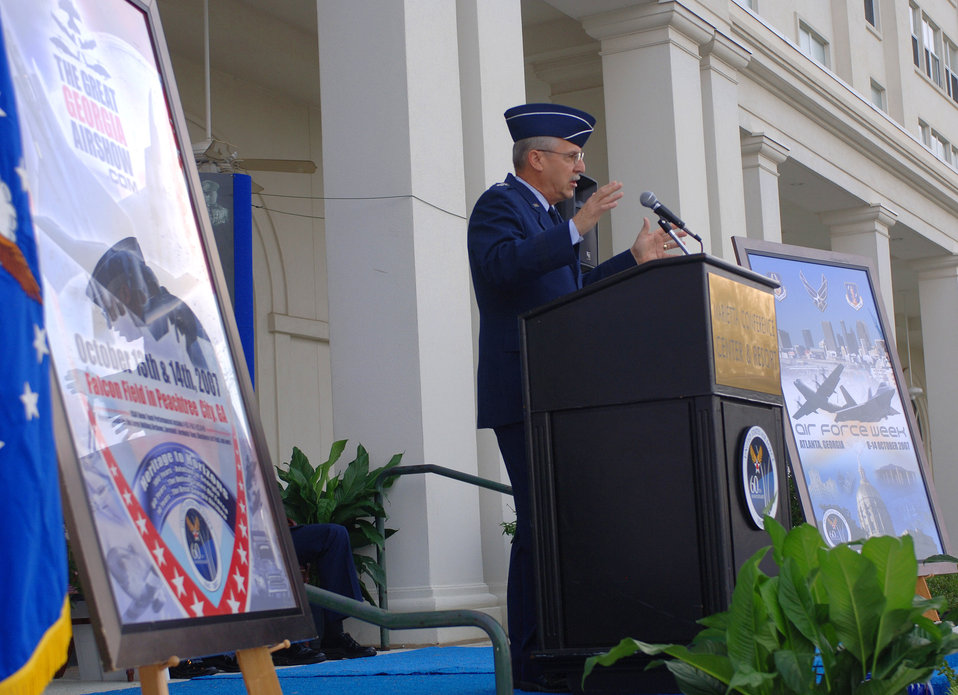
Air Force Week Atlanta kicks off

Maj. Gen. Martin M. Mazick provides remarks on Air Force Week Atlanta events to an estimated crowd of 150 during a proclamation ceremony Oct. 8 in Marietta, Ga. Atlanta is one of six cities throughout the country chosen to host an Air Force Week Oct. 8 to 14. The theme for the year is